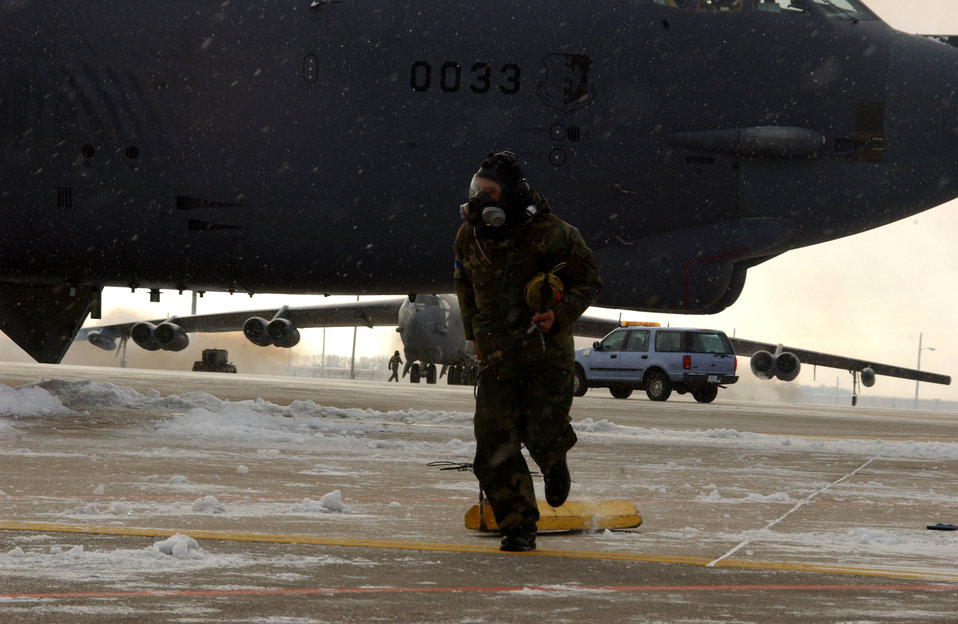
Pulling chocks

MINOT AIR FORCE BASE, N.D. -- Senior Airman Chris Olivia pulls the chocks from the wheels of a B-52 Stratofortress bomber during an exercise here Oct. 31, despite a winter storm that passed through the area. The storm reduced temperatures to 26 degrees, and dropped six inches of snow. Olivia is a crew chief with the 5th Maintenance Squadron.